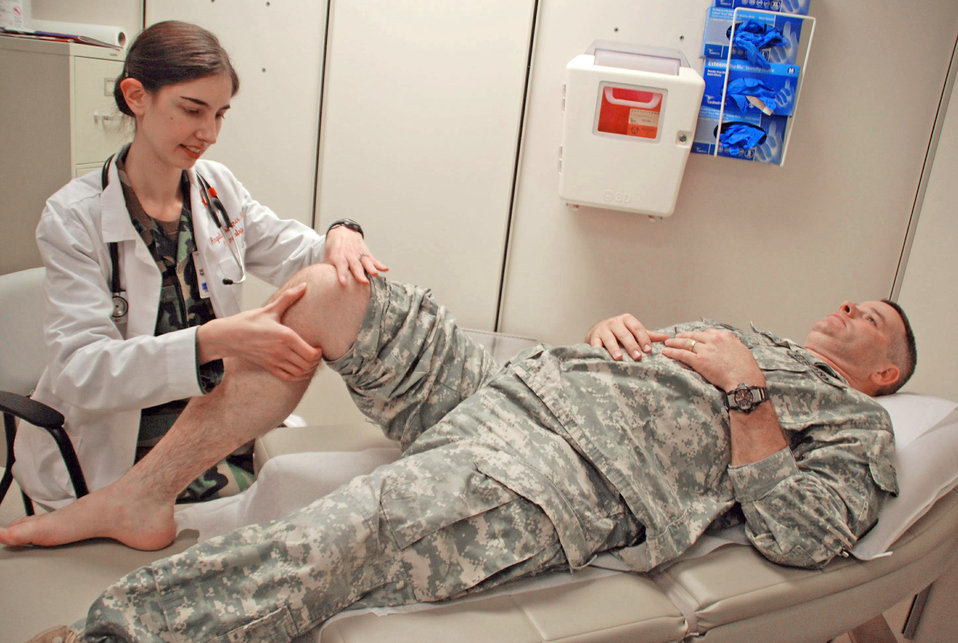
Air Force doctor wins national award

Capt. (Dr.) Angelique Collamer examines Maj. Mitchell Osburn's knee July 21 at the Brooke Army Medical Center Rheumatology Clinic at Fort Sam Houston, Texas. Doctor Collamer was selected for the 2009 American College of Rheumatology Distinguished Award. Doctor Collamer is an Air Force rheumatology fellow assigned to the 58th Medical Wing at Lackland Air Force Base, Texas.